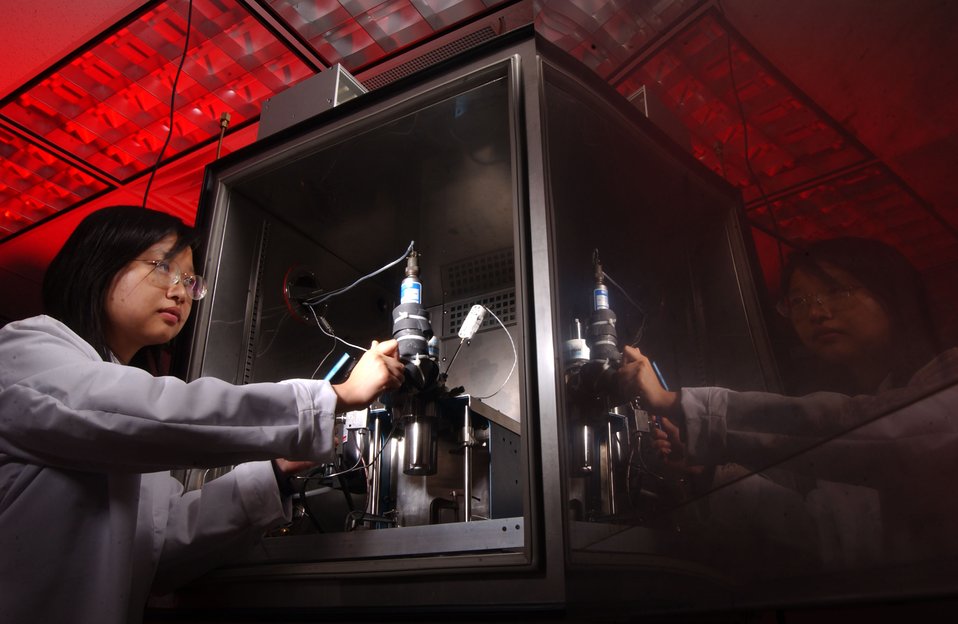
Yi Zhang, a research associate in the Geosciences Division at the National Energy Technology Laboratory's Office of Science and Engineering Research performs her doctoral research at NETL.
Yi Zhang is preparing an experiment in one of the high-pressure reactors associated with NETL's Hydrate Facility. She is studying the thermodynamics of hydrate formation by performing experiments hydrate formation and dissociation from gases dissolved in aqueous systems and by improving theoretical models to predict and describe this phenomenon. This work will impact both the carbon sequestration science area and the natural gas hydrates research area.